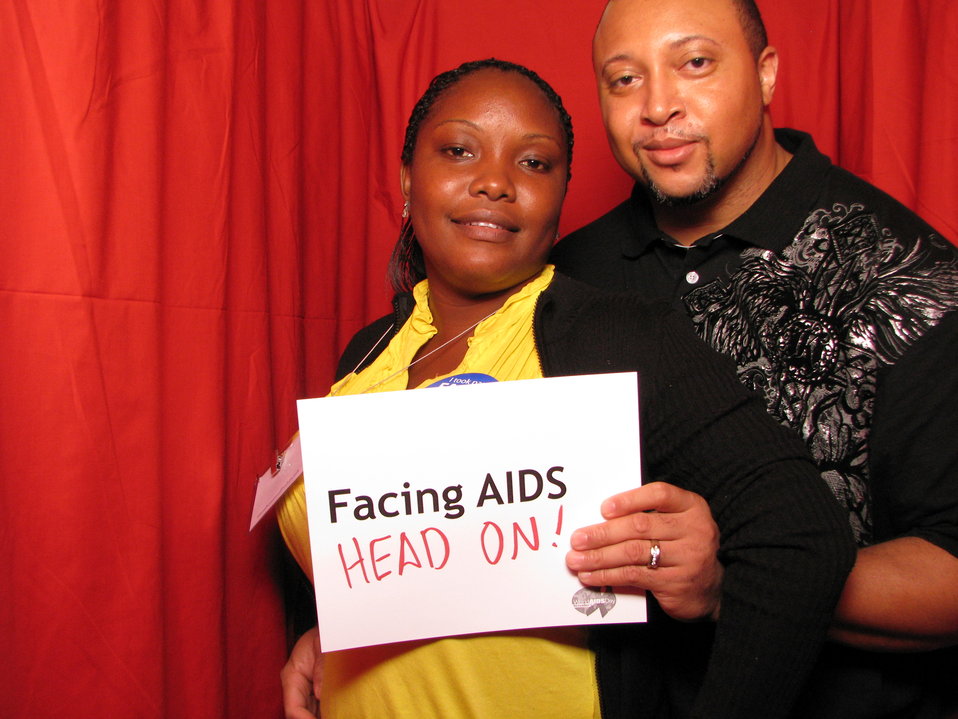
FACING AIDS HEAD ON!

From the AIDS.gov photo booth at the U.S. Conference on AIDS, September 2010 (Orlando, FL).